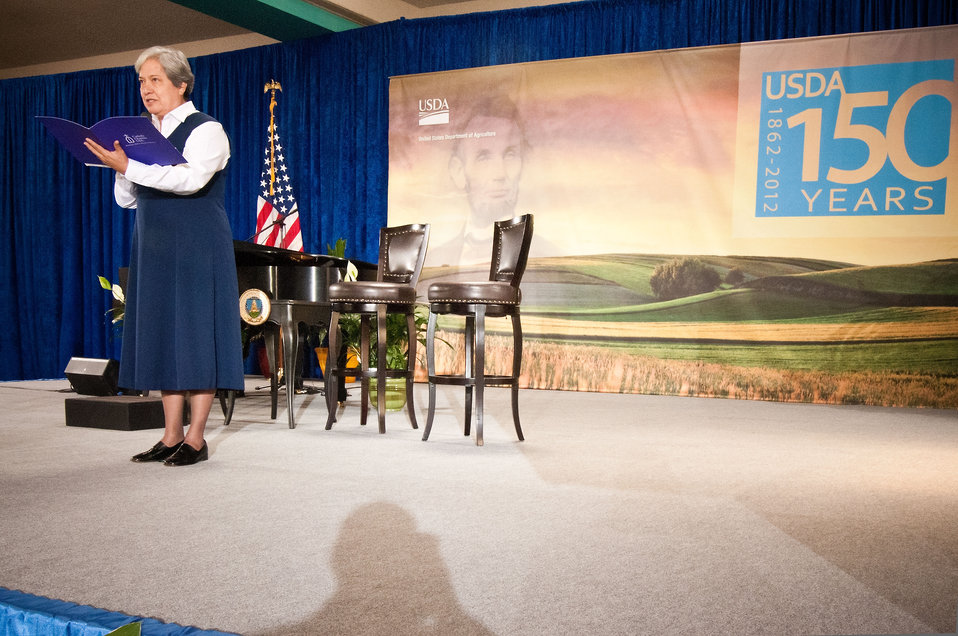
Sister Norma Pimentel Catholic Charities of the Rio Grande Valley in the Diocese of Brownsville, TX gives the invocation at the opening of the United States Department of Agriculture's 150th Anniversary celebration in Washington, D.C., on Tuesday, May 15, 2012.